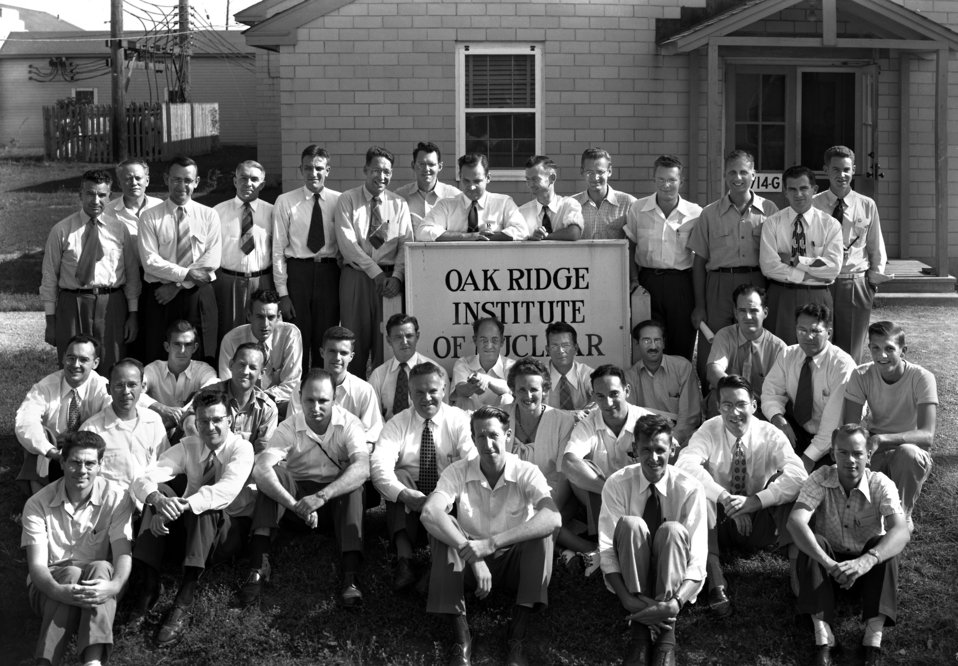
Oak Ridge Institute Class Group 1948

5238 DOE photo Ed Westcott 9-22-1948 Oak Ridge Tennessee